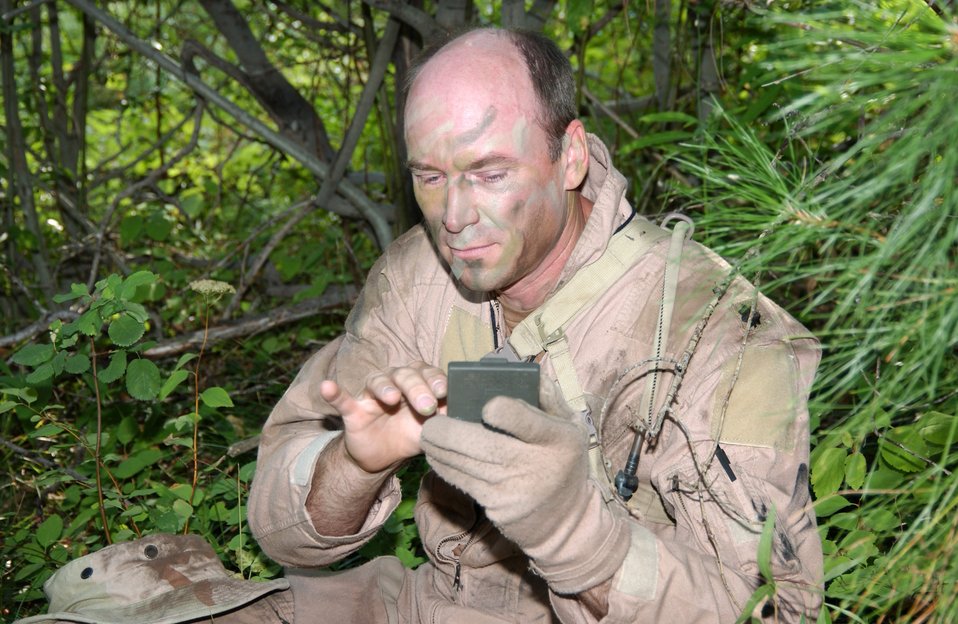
Air Guard pilots train in escape, evasion

Lt. Col. Gus Kohntopp applies camouflage face paint to avoid being spotted by the enemy during the Idaho Air National Guard's combat survival training exercise near Idaho City, Idaho, on Aug. 6.